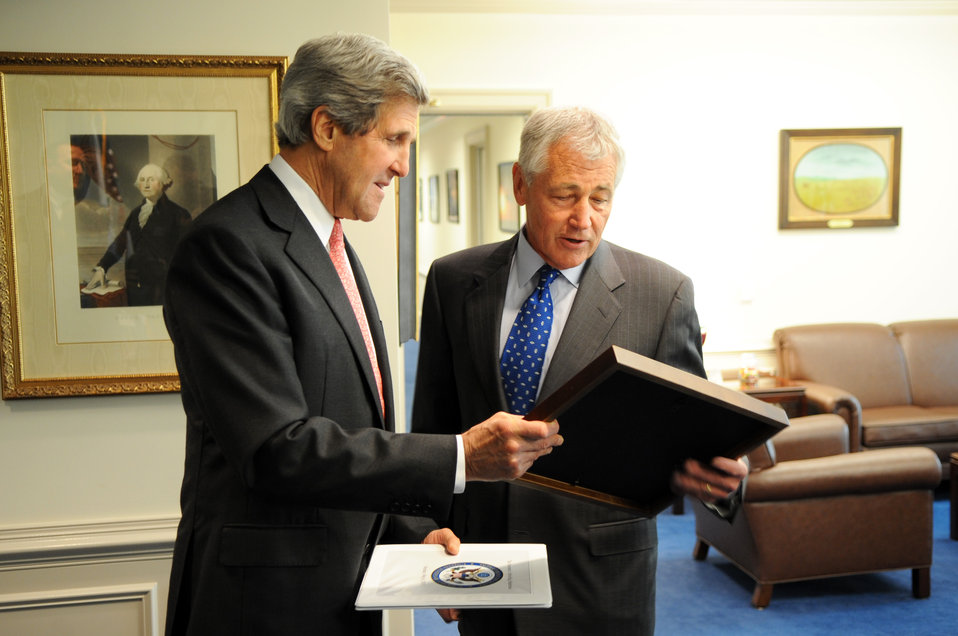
Secretary Kerry Presents Secretary Hagel a Photo of the Two

U.S. Secretary of State John Kerry presents U.S. Secretary of Defense Secretary Chuck Hagel a photo, showing the two on an Afghan mountaintop in 2008 after a Blackhawk helicopter they were riding in made an emergency landing, after their meeting at the Pentagon in Arlington, Virginia, on May 6, 2013. The inscription read, To my friend Chuck. From Vietnam, to the Senate, to a mountain in Afghanistan – to the Pentagon – we have shared an interesting journey! Great to be partners and friends. All the best, John.